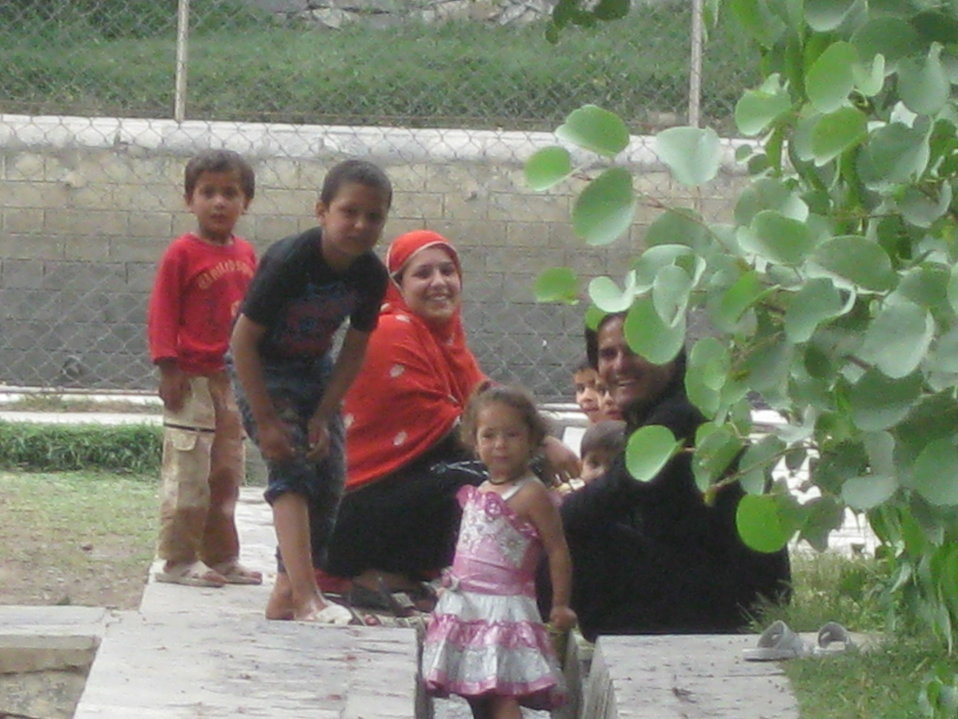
Afghan Youth Voices 095